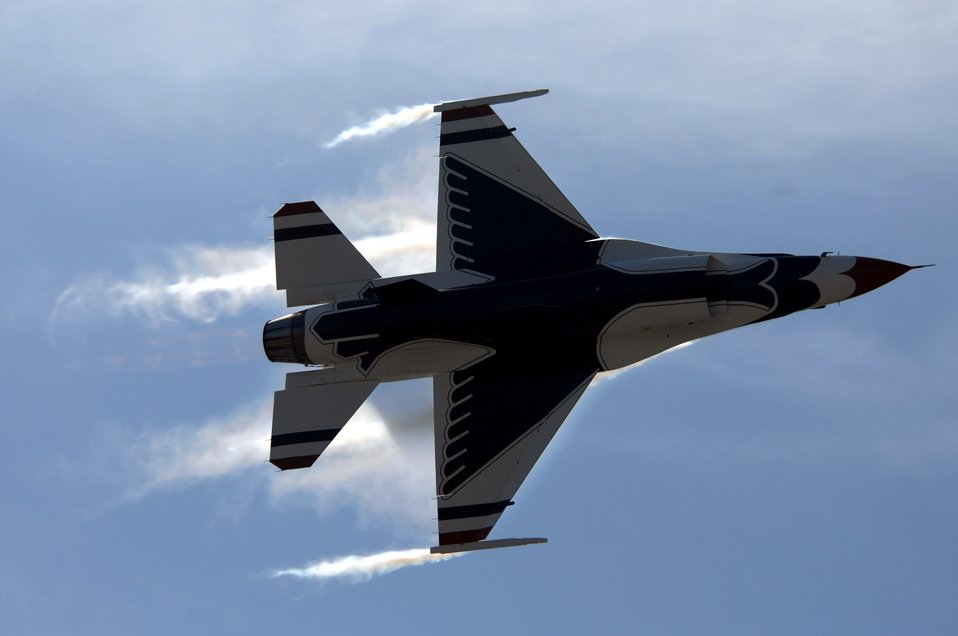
Raptor, Thunderbirds fly over California

Maj. Ed Casey pulls high G's while performing the maximum 360-degree turn during the U.S. Air Force Air Demonstration Squadron, the Thunderbirds, air show April 1 at Naval Base Ventura County in Point Mugu, Calif. Captain Casey is the Thunderbirds lead solo. The four-aircraft diamond formation demonstrates the training and precision of Air Force pilots, while the solo aircraft highlight the maximum capabilities of the F-16.